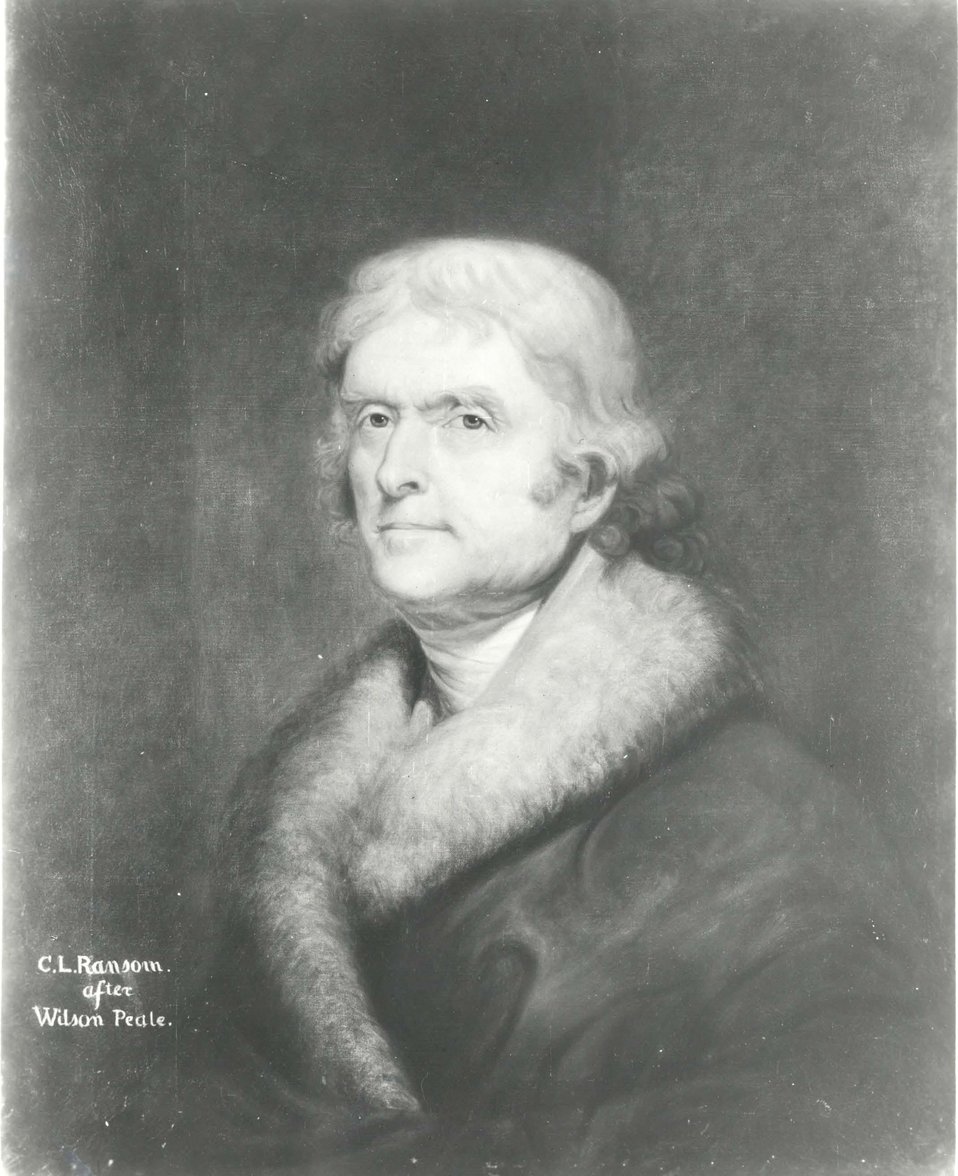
Thomas Jefferson, U.S. Secretary of State, March 22, 1789 to December 31, 1793